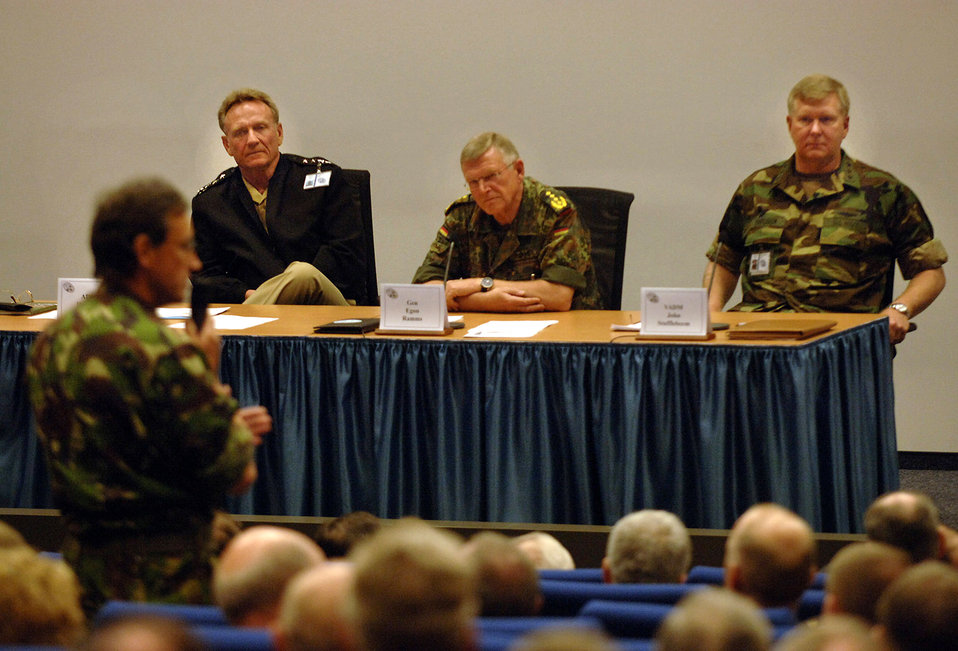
NATO Response Force works to improve communications

A panel of Joint Force commanders field questions May 4 during the week-long NATO Response Force Exercise Allied Reach '07 at Allied Air Component Command Headquarters at Ramstein Air Base, Germany. From left are Navy Adm. Harry Ulrich, commander of Allied Joint Force Command Naples; German Gen. Egon Ramms, commander of Joint Force Command Brunssum; and Navy Adm. John Stufflebeem, commander of Joint Command Lisbon. The NATO commanders, along with representatives from 26 NATO nations attended the exercise that examined the command and control, logistics and training of the NATO Response Force at the strategic and operational levels.